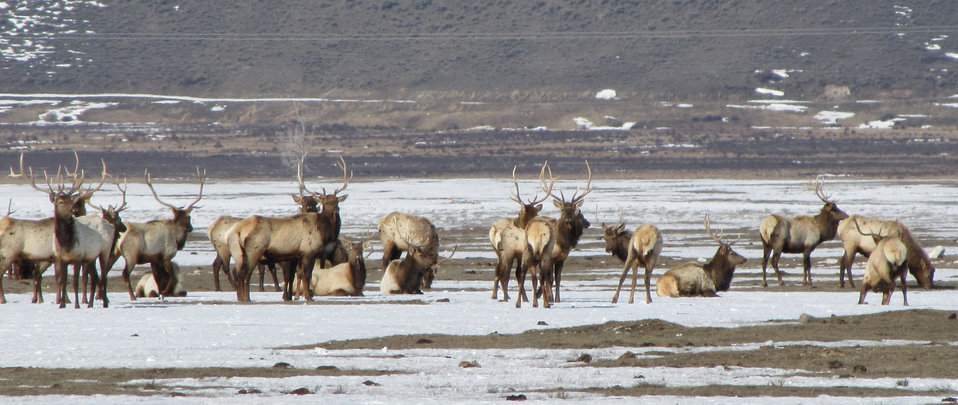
Still Hanging On

It's the third week of March, and many in this group of bulls still have their antlers. How many can you spot that have dropped theirs?